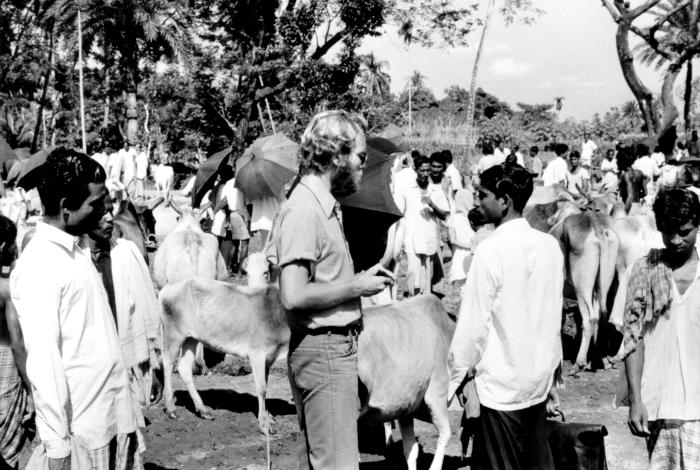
Here Jeff Koplan, M.D., M.P.H., is participating in smallpox-related field care in Bangladesh during the 1970's.